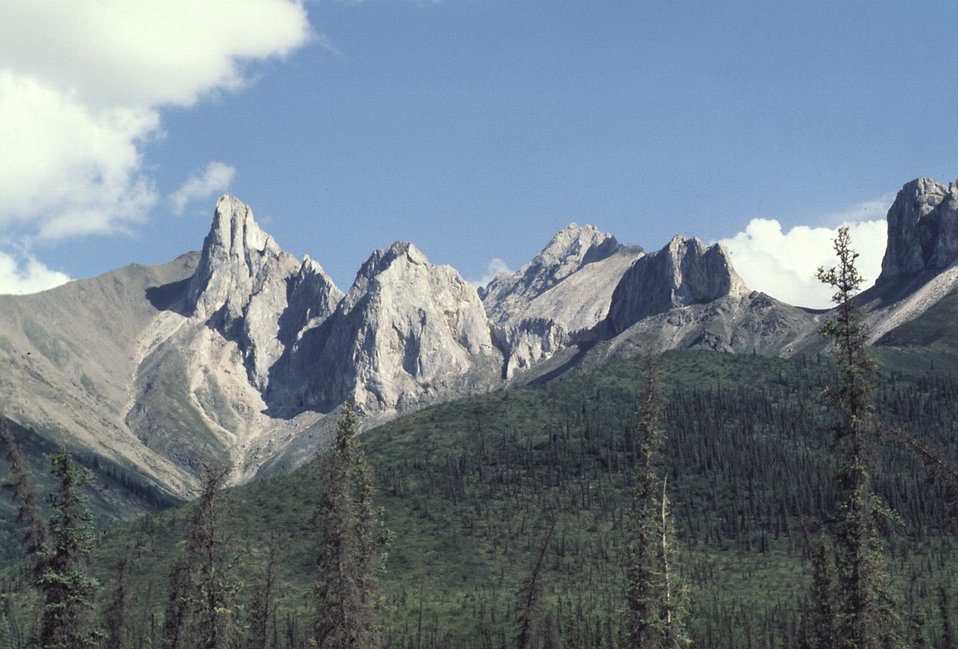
Dalton Highway, Mt. Snowden area